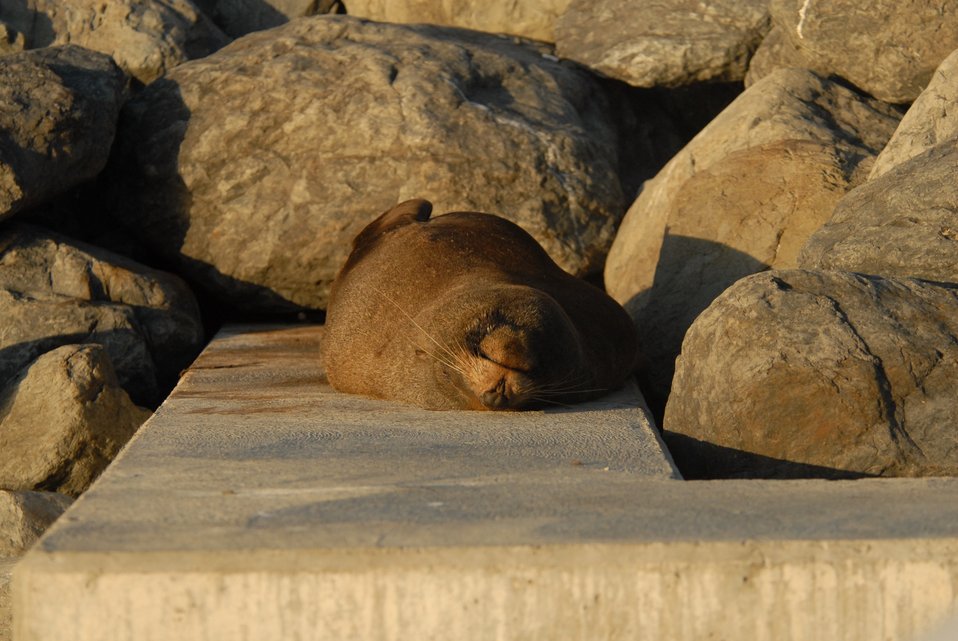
Southern fur seal